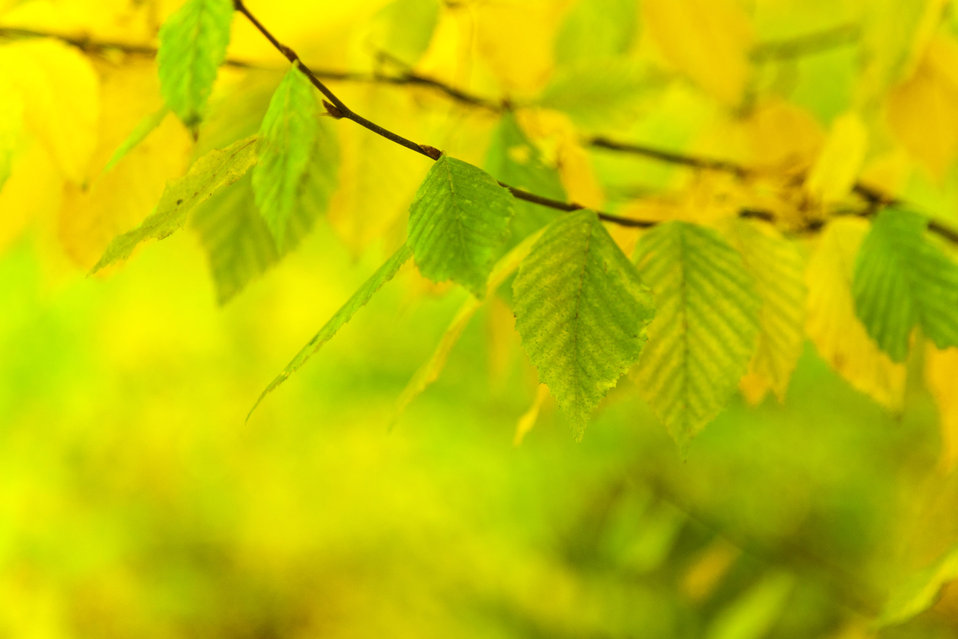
Green and yellow beech leaves autumn background.